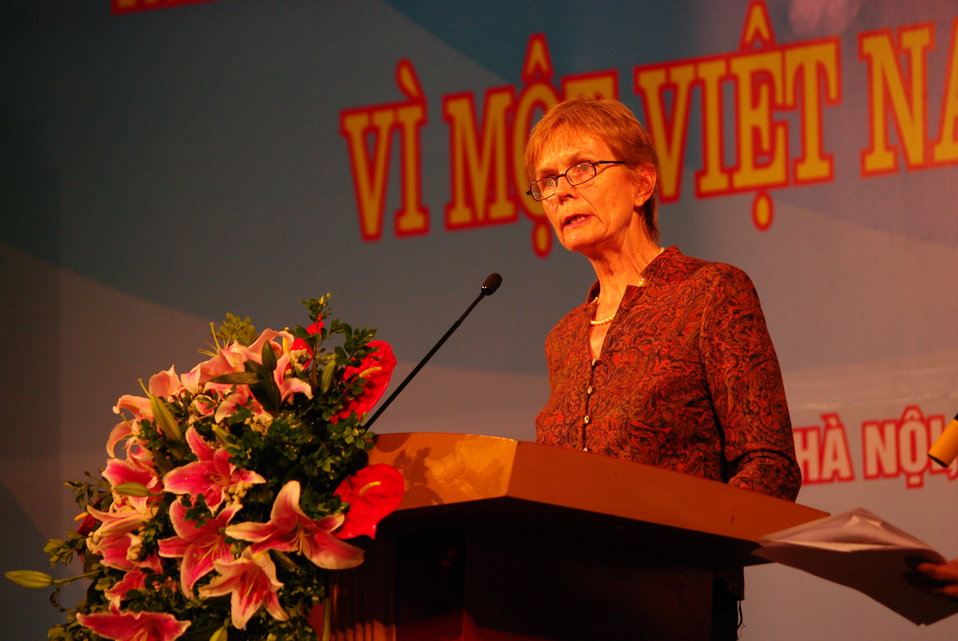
Dr. Cornelia Hennig of the World Health Organization speaks at World TB Day

March 23, 2013